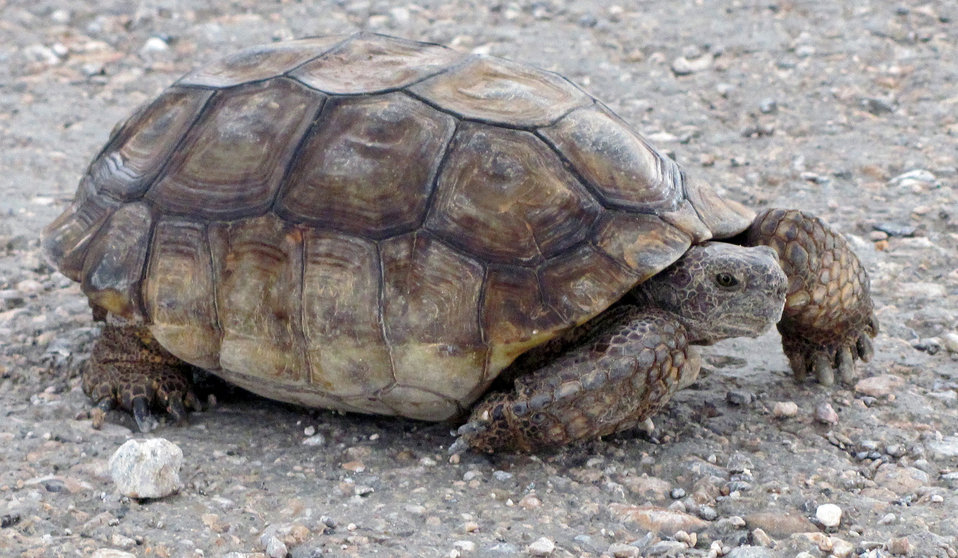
Desert Tortoise6

Desert tortoise near Las Vegas.